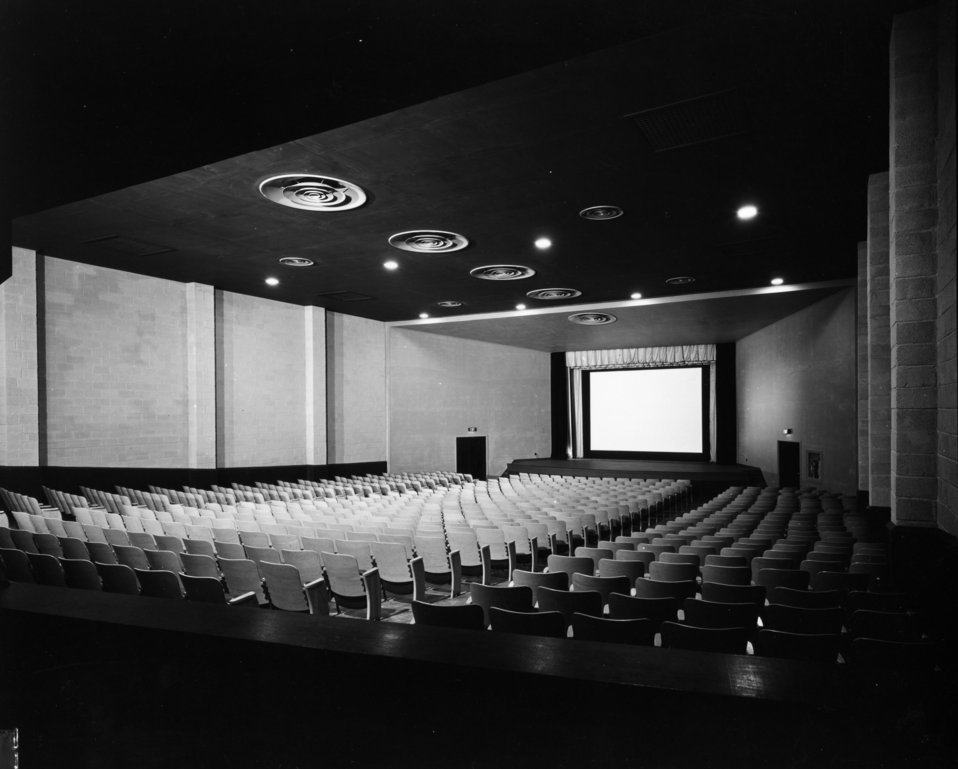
Business activity at Oak Ridge